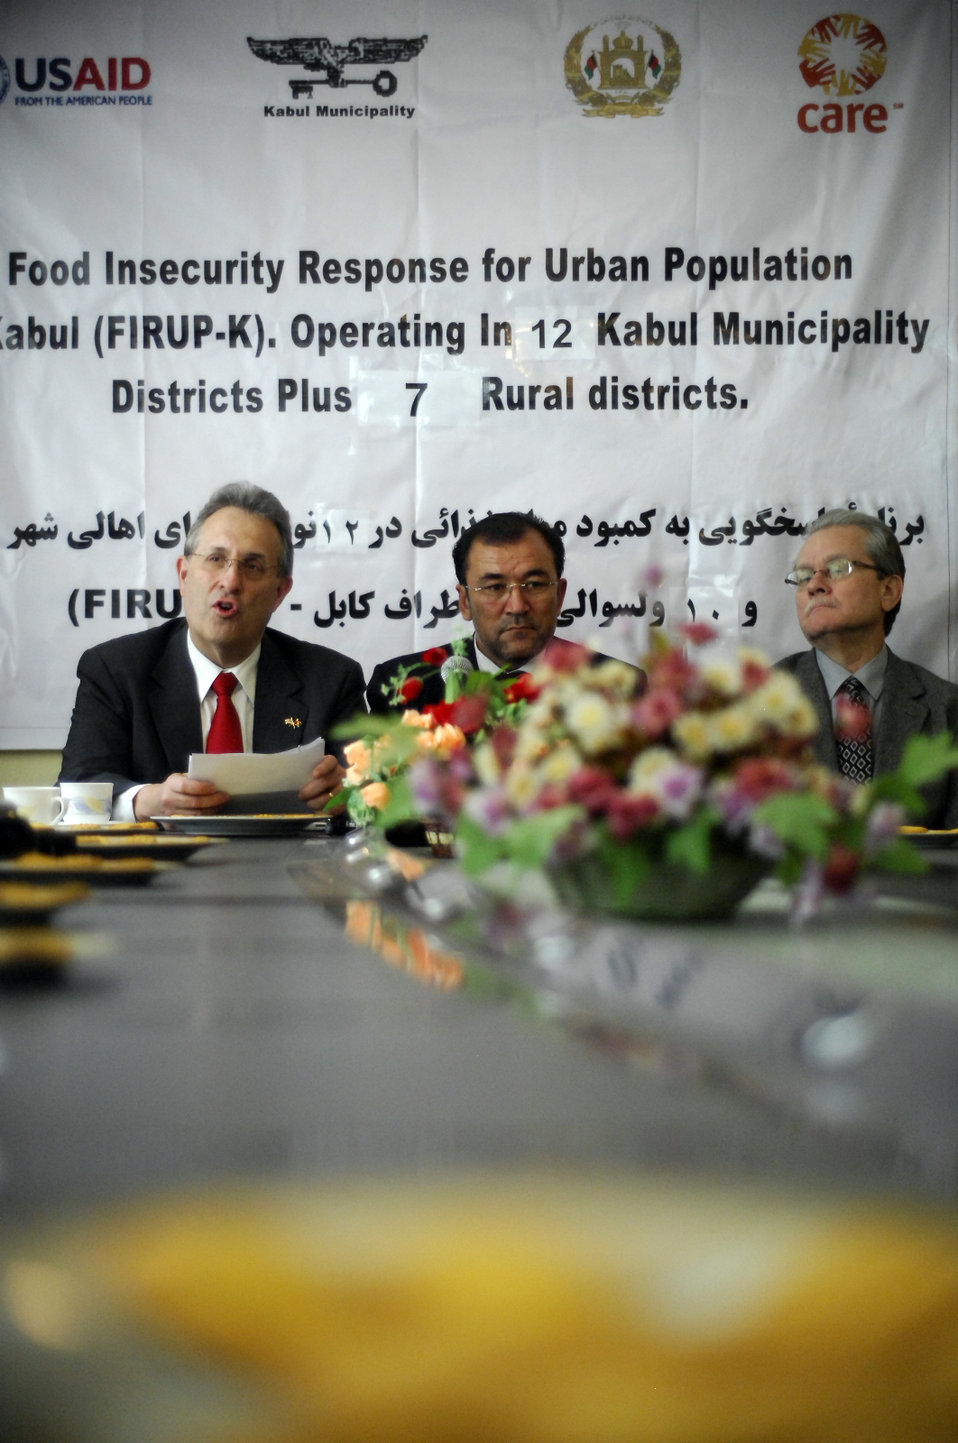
Care94 (1)